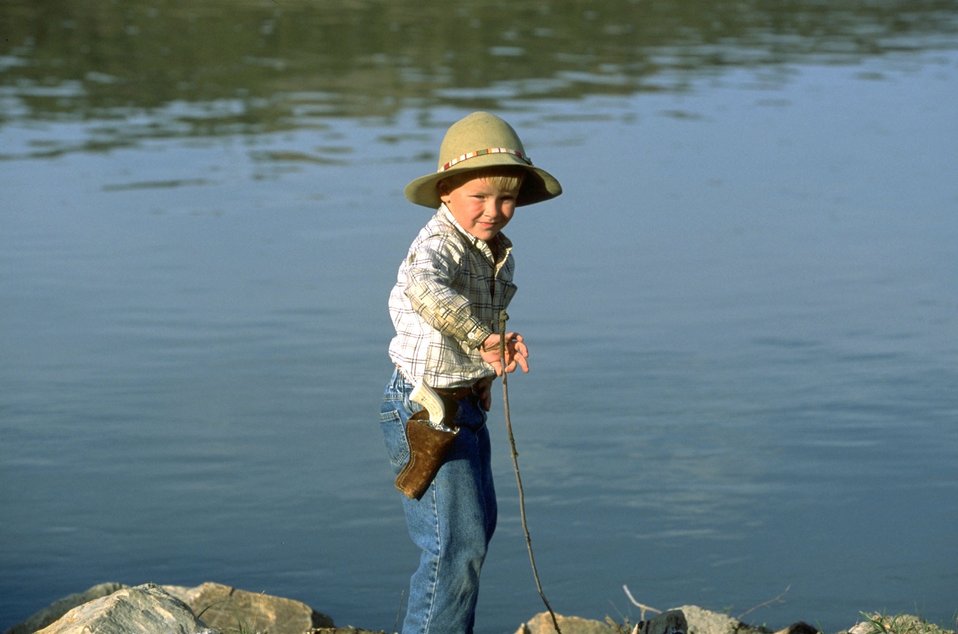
Children at Kipp Recreation Area